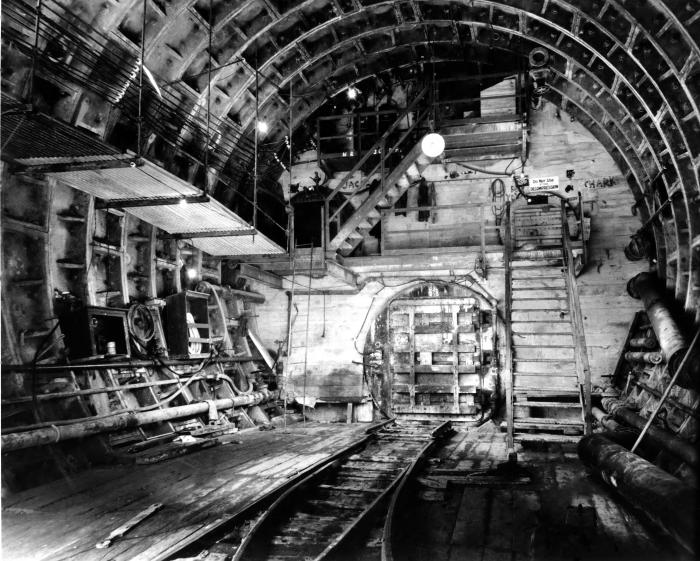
In this historical image that was provided by the Center for Disease Control's (CDC), National Institute for Occupational Safety and Health (NIOSH), the South Tunnel bulkhead, locks and platform of the Queens Midtown Tunnel, in Queens, New York was depicted. Hopefully, this subterranean atmosphere was being monitored, and that safe levels of potentially dangerous particulates and gasses, were required to be maintained. It could not be determined as to what protective clothing accessories needed to be worn by workers, but hopefully, they were wearing a protective, gloves, masks and hardhats where applicable.